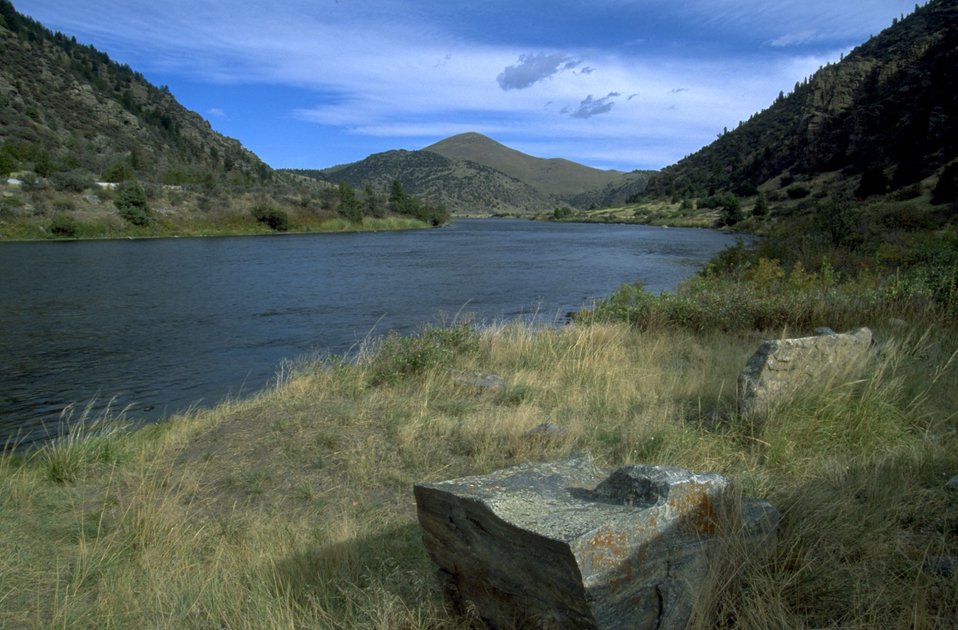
Orange lichen on a rock by the Madison River